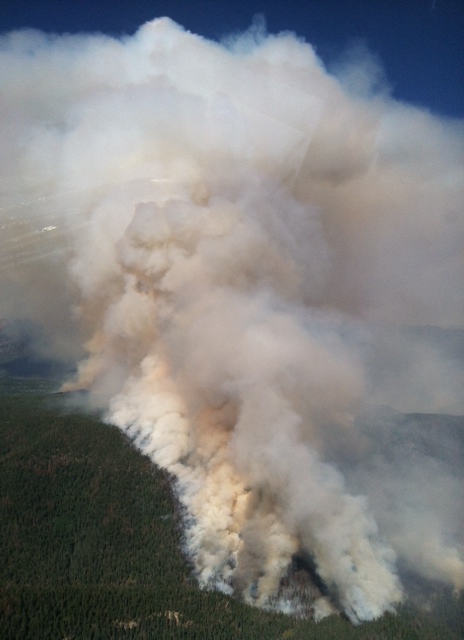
The Little Sand Wildfire burns in the San Juan National Forest near Pagosa Springs, CO, on Monday, June 18, 2012. The wildfire was started by a lightening strike on May 13, 2012. The fire is in rugged and inaccessible terrain, north of the Piedra River, and is currently estimated at 14,224 acres with 30% containment as of June 20, 2012.